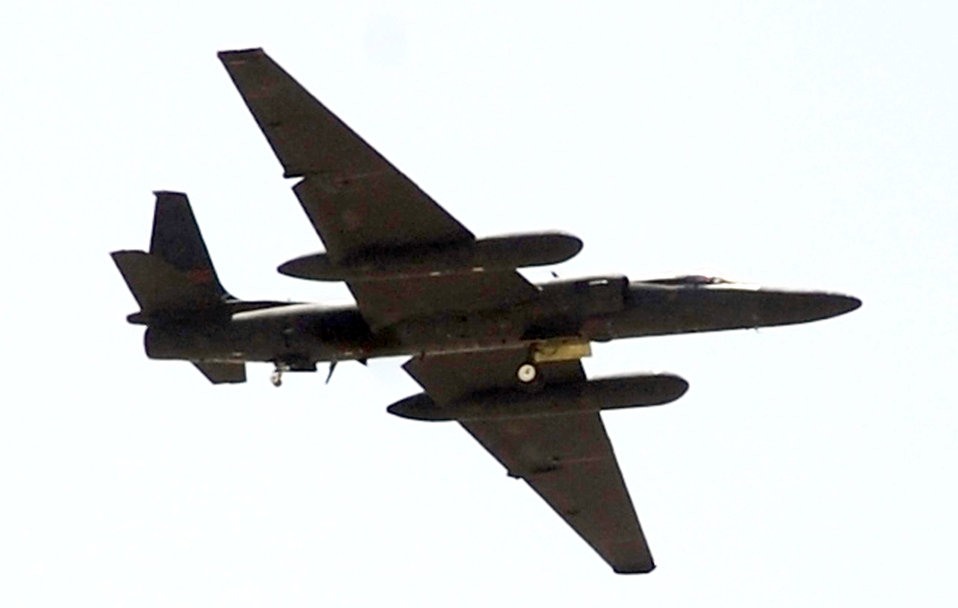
Empire Challenge 10

During Empire Challenge 10, analysts from the 480th Intelligence, Surveillance and Reconnaissance Wing provided U-2 Dragon Lady (like the aircraft pictured above) and RQ-4A Global Hawk imagery and feeds, as well as tested data interoperability with distributed common ground system elements from other services.